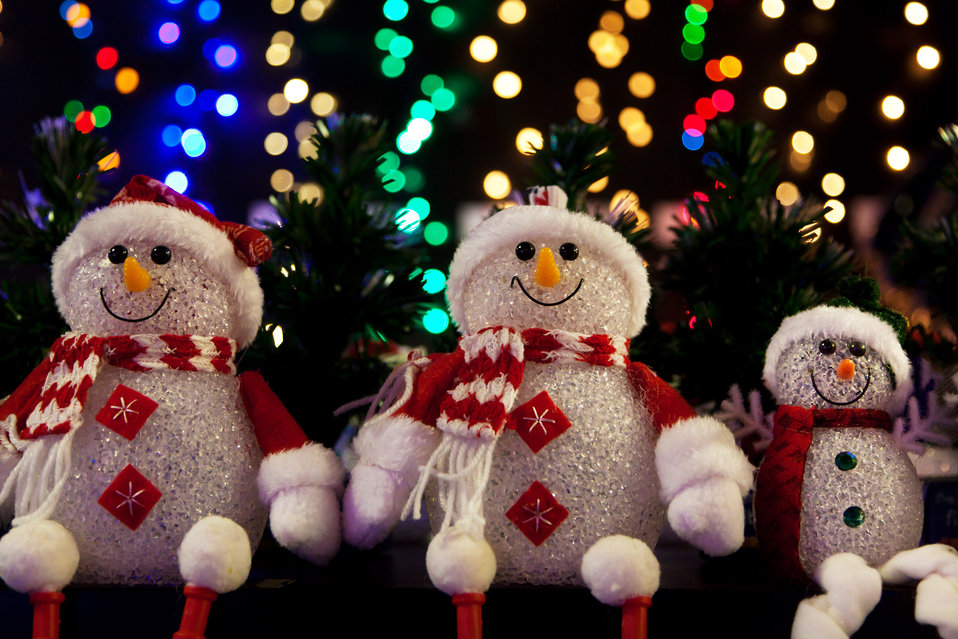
Snowman family

Christmas snowman decorations with blurred colorful lights in the background.